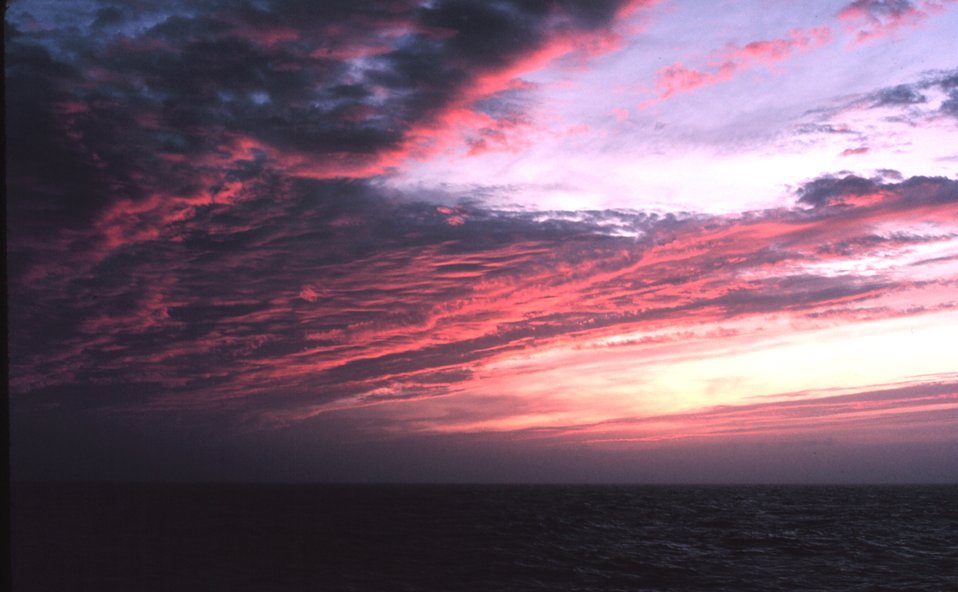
Another glorious sunset - a benefit of the 4 to 8 watch.